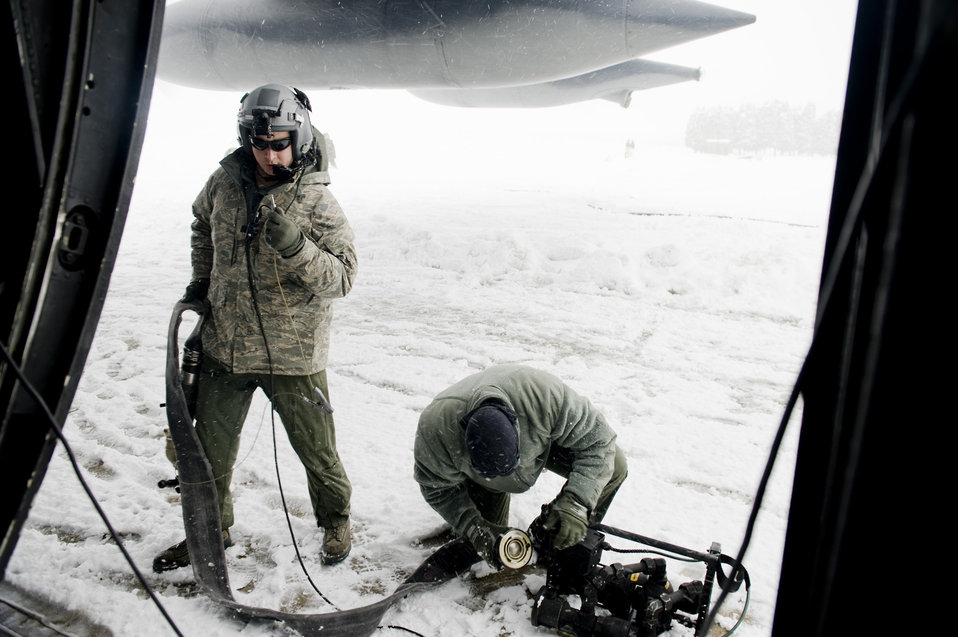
FARP ready at Yamagata Airport

Staff Sgt. Nicholas Wisnoski and Tech. Sgt. Timothy Rodgers setup equipment to defuel an MC-130P Combat Shadow March 17, 2011, at Yamagata Airport, Japan, during efforts to establish a forward area refueling point there. FARPs allow aircraft to operate at further distances by allowing the aircraft to refuel where no fuel typically exists. The fuel at Yamagata Airport will be used for American search-and-recovery teams during Japan's earthquake and tsunami relief. Sergeant Wisnoski is with the 17th Special Operations Squadron at Kadena Air Base, Japan. Sergeant Rogers is with the 353rd Special Operations Group at Kadena AB.